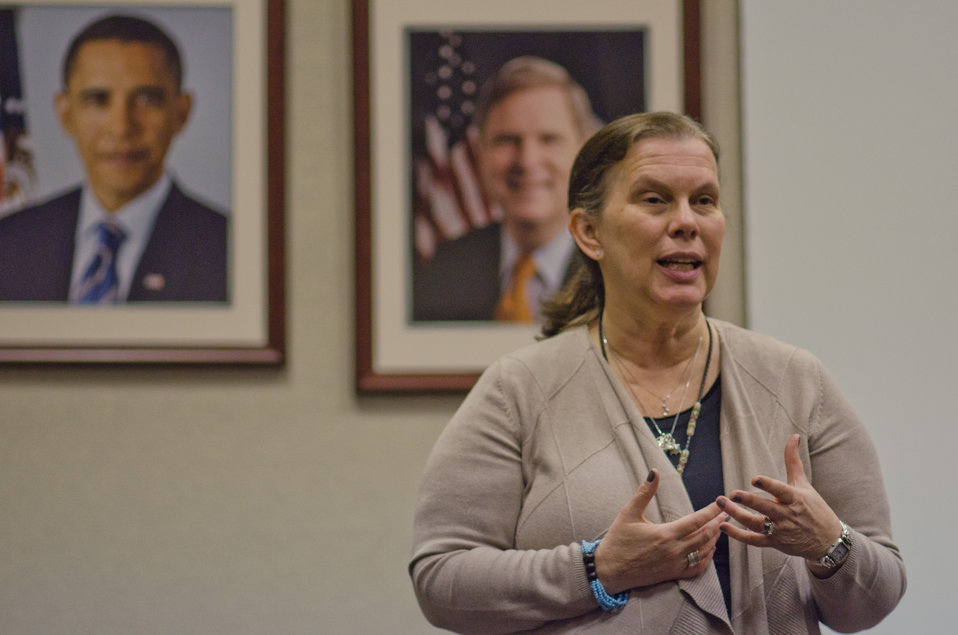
U.S. Department of Agriculture (USDA) Senior Advisor for Tribal Affairs Janie Hipp, moderated an Office of Tribal Relations meeting in Washington, DC, on Monday, March 28, 2011.